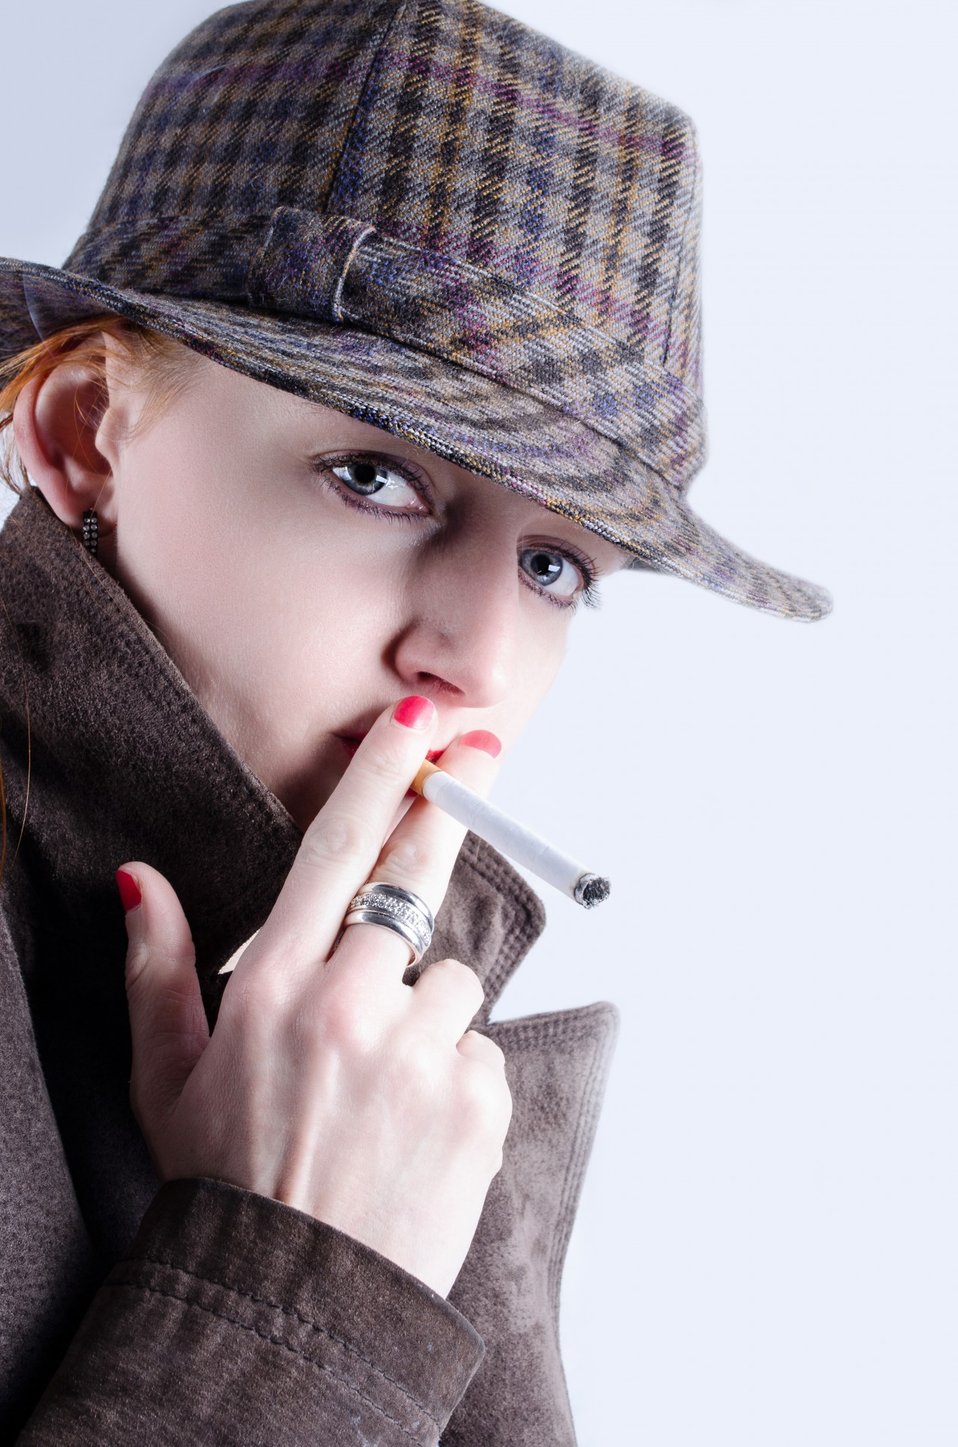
Woman smokes a cigarette.